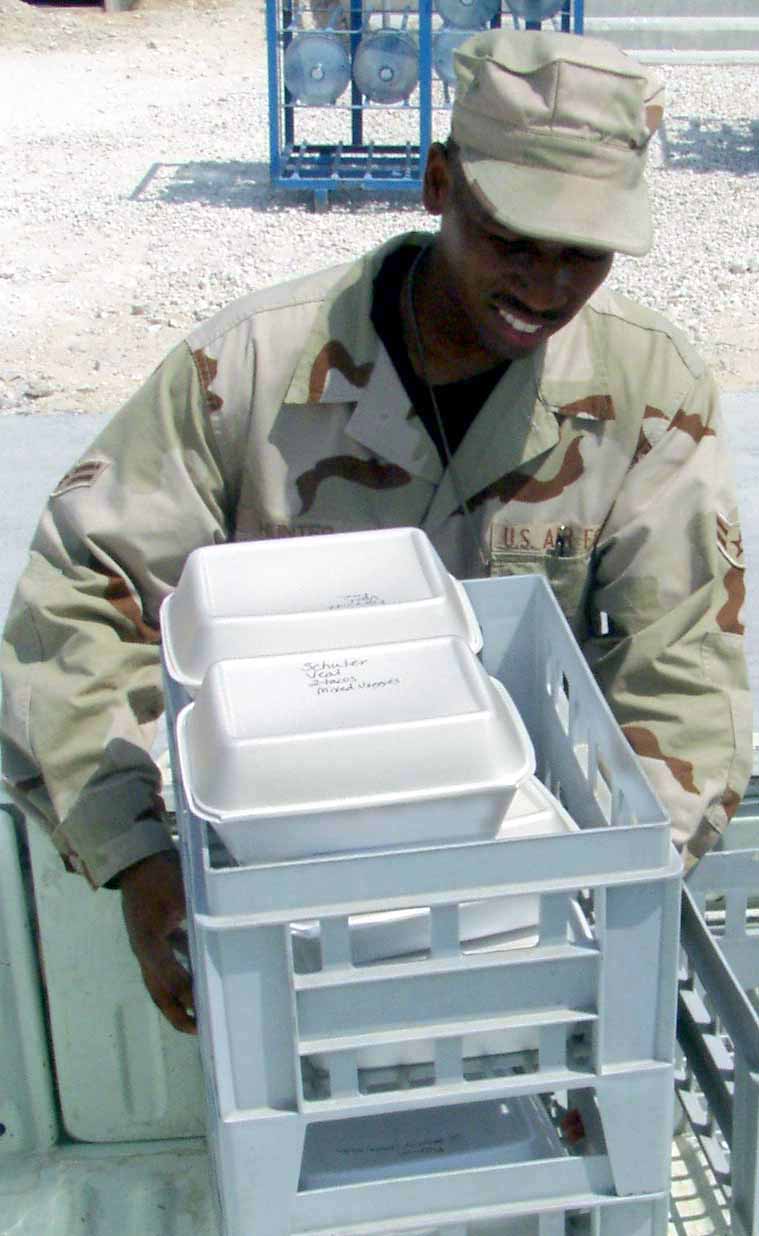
Services serves up thousands of feasts

SOUTHWEST ASIA -- Airman 1st Class Brian Hunter helps load boxed meals into a truck for security forces Airmen at a forward-deployed location. Airman Hunter plays one of many vital roles in bringing food to Airmen throughout the base. He is from Luke Air Force Base, Ariz.